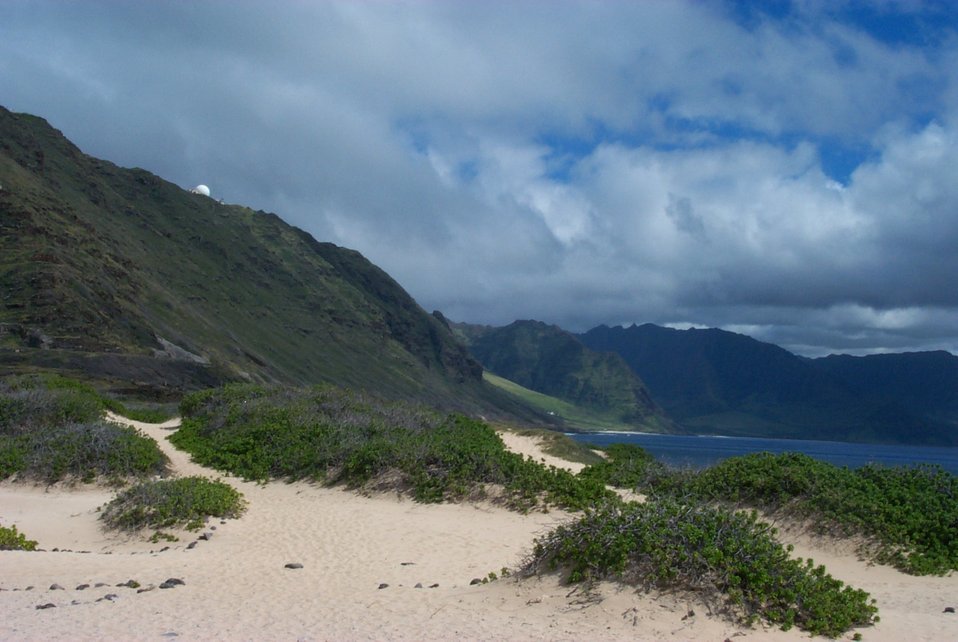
Elk River Spit, Oregon

US Fish and Wildlife Service Coastal Program is working with partners to remove non-native beach grass and restore nesting and wintering habitat for western snowy plovers.